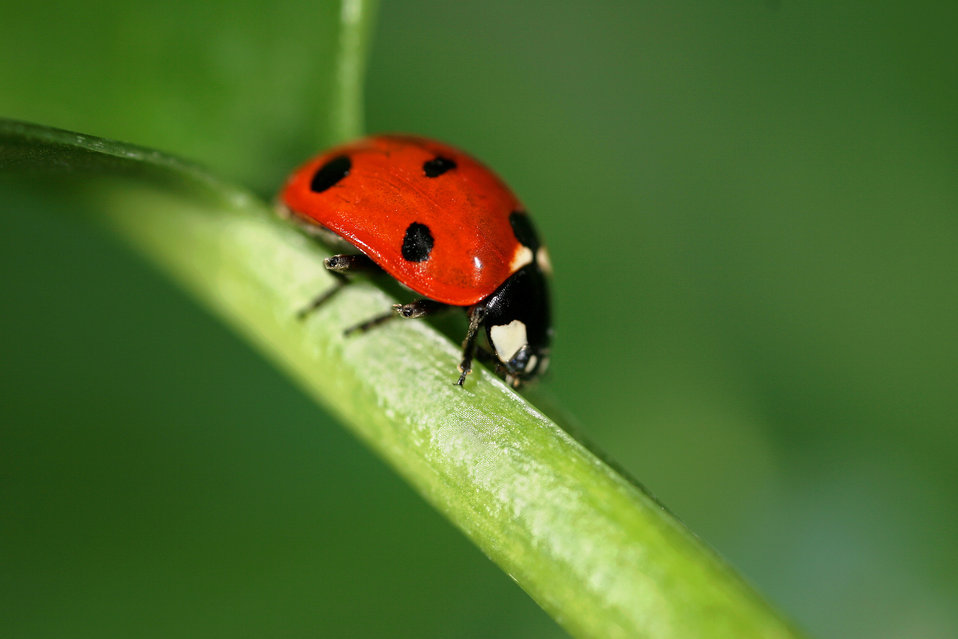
A lady beetle (Coccinella septempunctata) sits on a leaf stem at the U.S. Department of Agriculture’s (USDA) Agricultural Research Service (ARS) North Central Laboratory in Brookings, SD on Nov. 11, 2011. Coccinella septempunctata is a predatory lady beetle introduced into North America to control wheat pests, but its diet also includes pollen and nectar and USDA ARS scientists are studying the lady beetle’s feeding behavior to learn how to better use it for insect pest control.